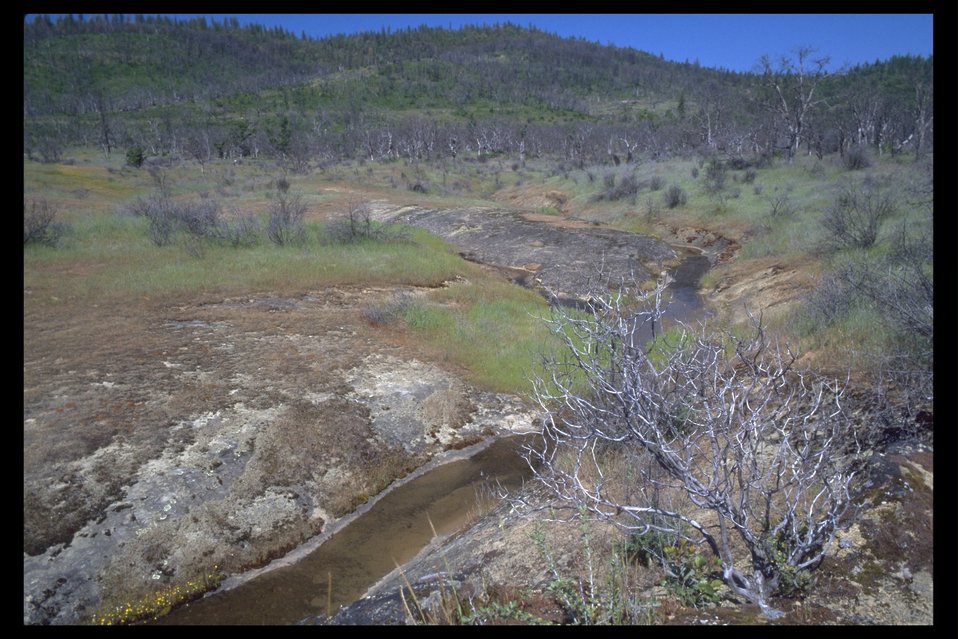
A creek near Meadows Road in Sam's Valley.